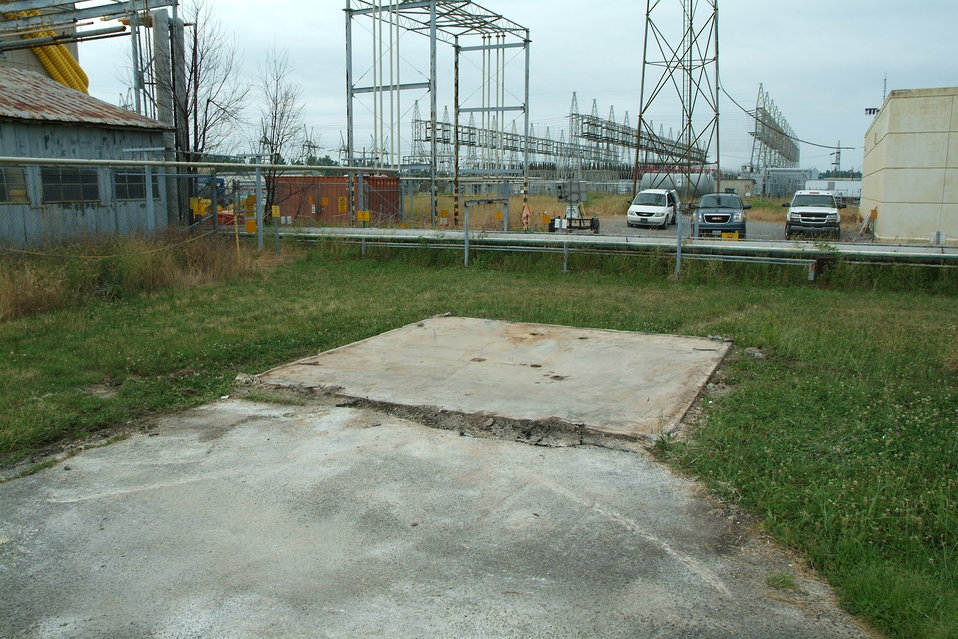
Power structure after

Recovery Act work conducted at the Paducah site.